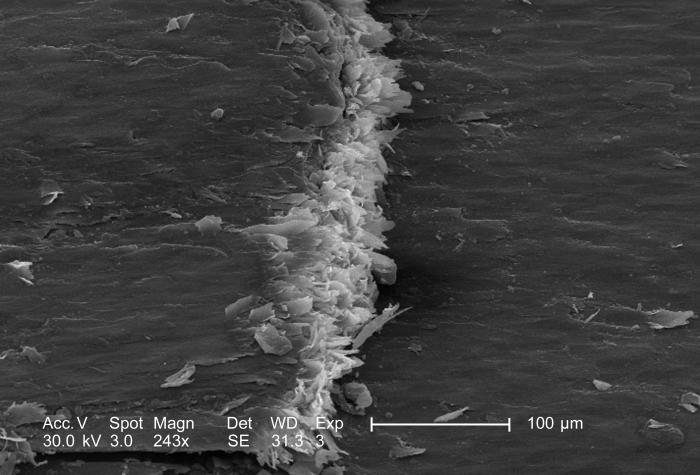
This 2005 scanning electron micrograph (SEM) depicts the morphological characteristics seen on the surface of a domesticated cat's, Felis domesticus, claw. Note the flakey appearance of the claw's lamellar, or layered configuration, which signifies the sloughing of the keratinized cells that comprise the nail matrix. The cat's needle-sharp claws are highly specialized structures specifically designed for grasping prey, and assisting in exercises that demand a great degree of traction such as climbing trees, running, and even grooming. Its claws are retractable, which allows the animal to pull the structures back into the skin of its paws, thereby, reducing the degree of daily wear and tear. This claw nail was found in the home of a cat owner after having been sloughed off of the paw of a house cat in the course of his everyday activities.